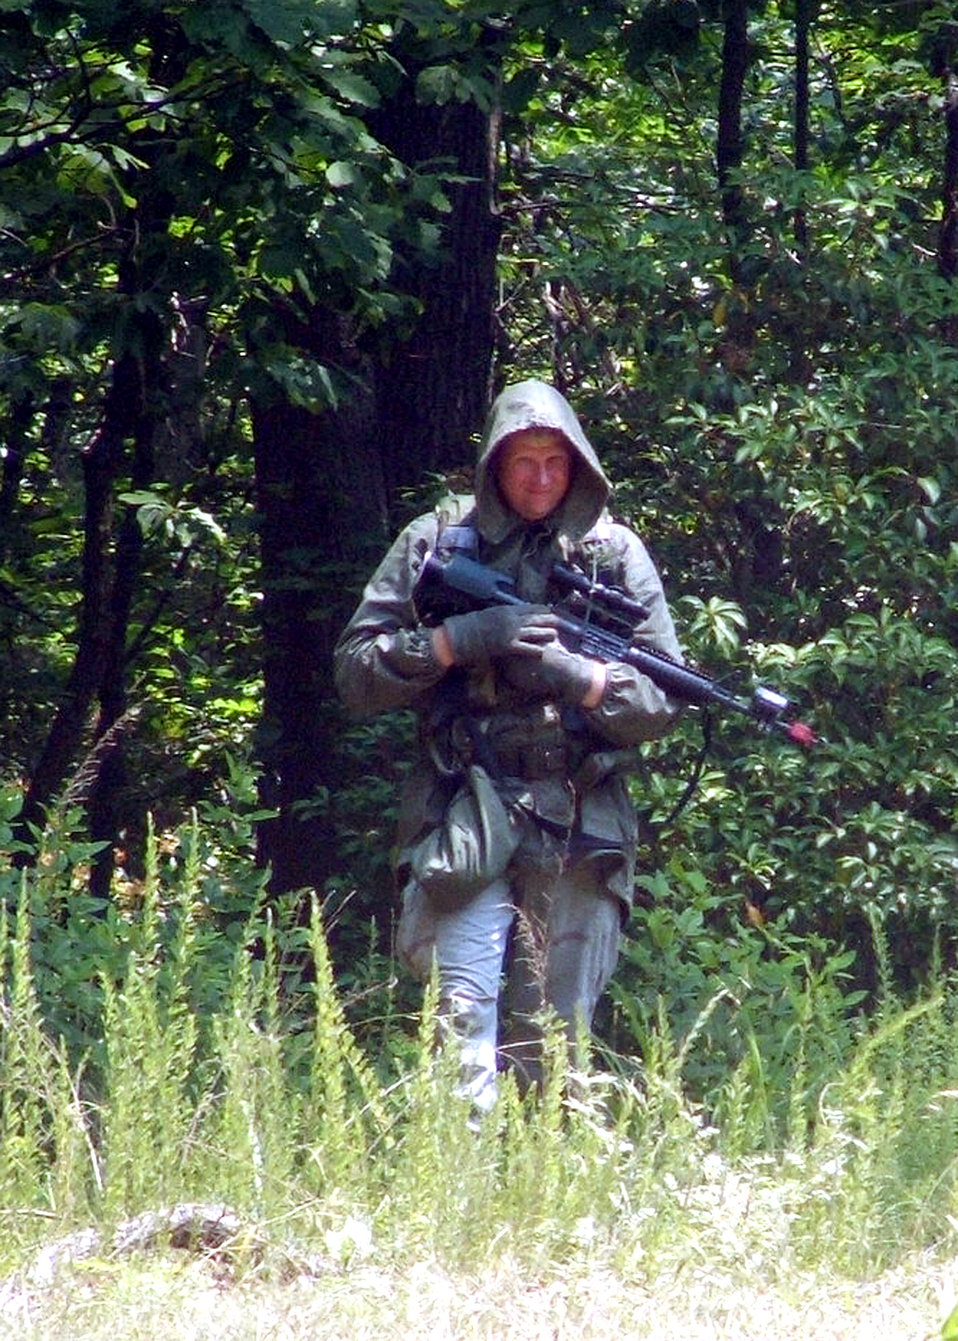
Contingency skills training

Tech. Sgt. Brandon Cooper plays the role of an opposing forces member during the Integrated Contingency Skills Training Course 06-4 convoy training at Fort Dix, N.J., on Thursday, June 22. More than 165 students are participating in the course. Students also learn urban tactics in preparation for deployments. The training is taught by staff at the Air Mobility Warfare Center's 421st Combat Training Squadron.